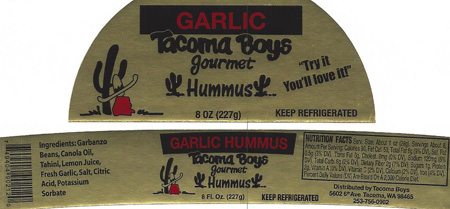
RECALLED – Hummus

July 16, 2013 – Product Recall – Hagee Foods Inc. dba Penny's Salsa Inc. Recalls Hummus Products Because of Possible Health Risk.